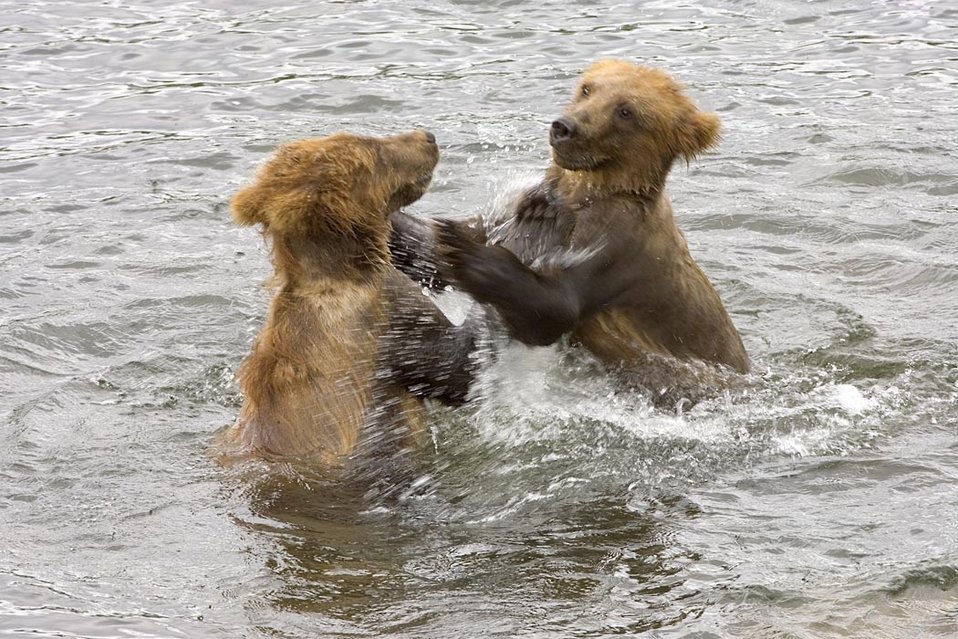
Brown bear cubs playing in water

Two grizzly bear cubs playing in the water on their hind legs.